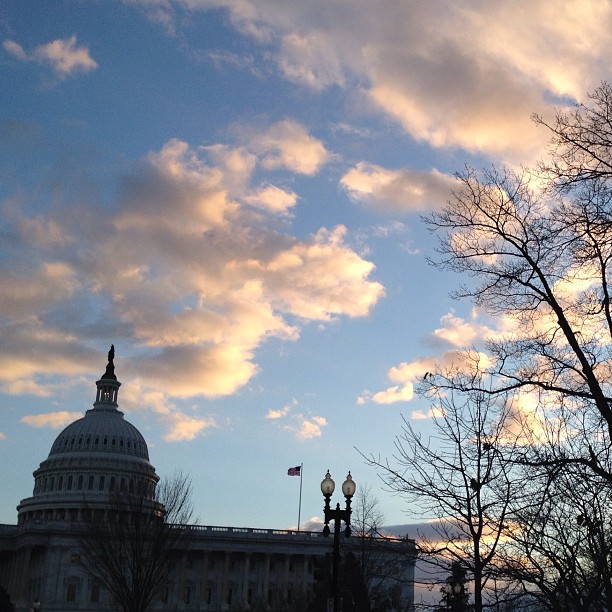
Evening on Capitol Hill.